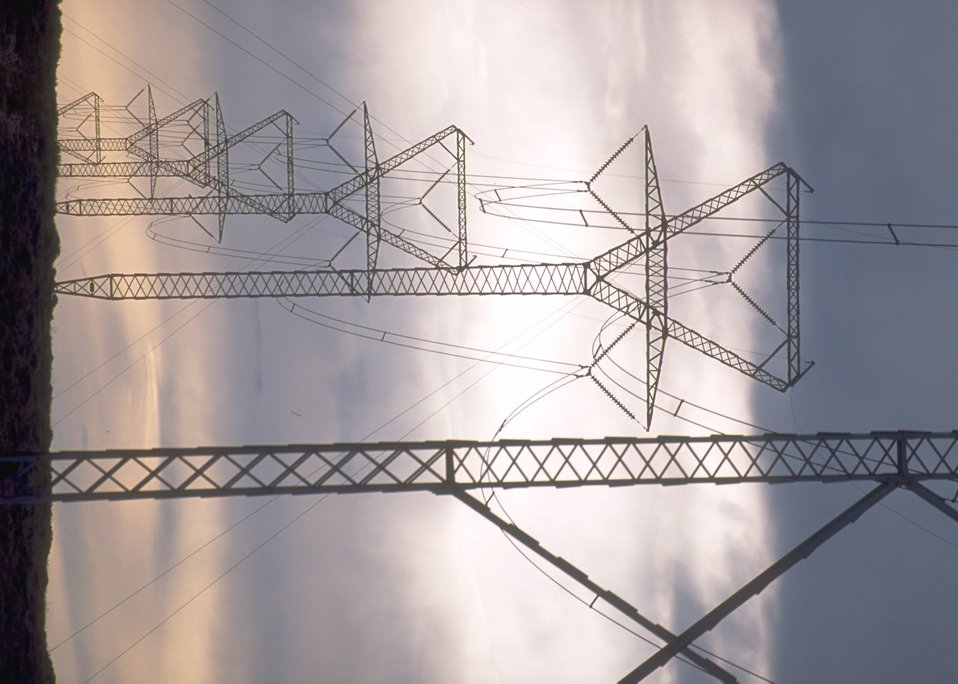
ROW's - Electric power lines near Rock Springs, WY.